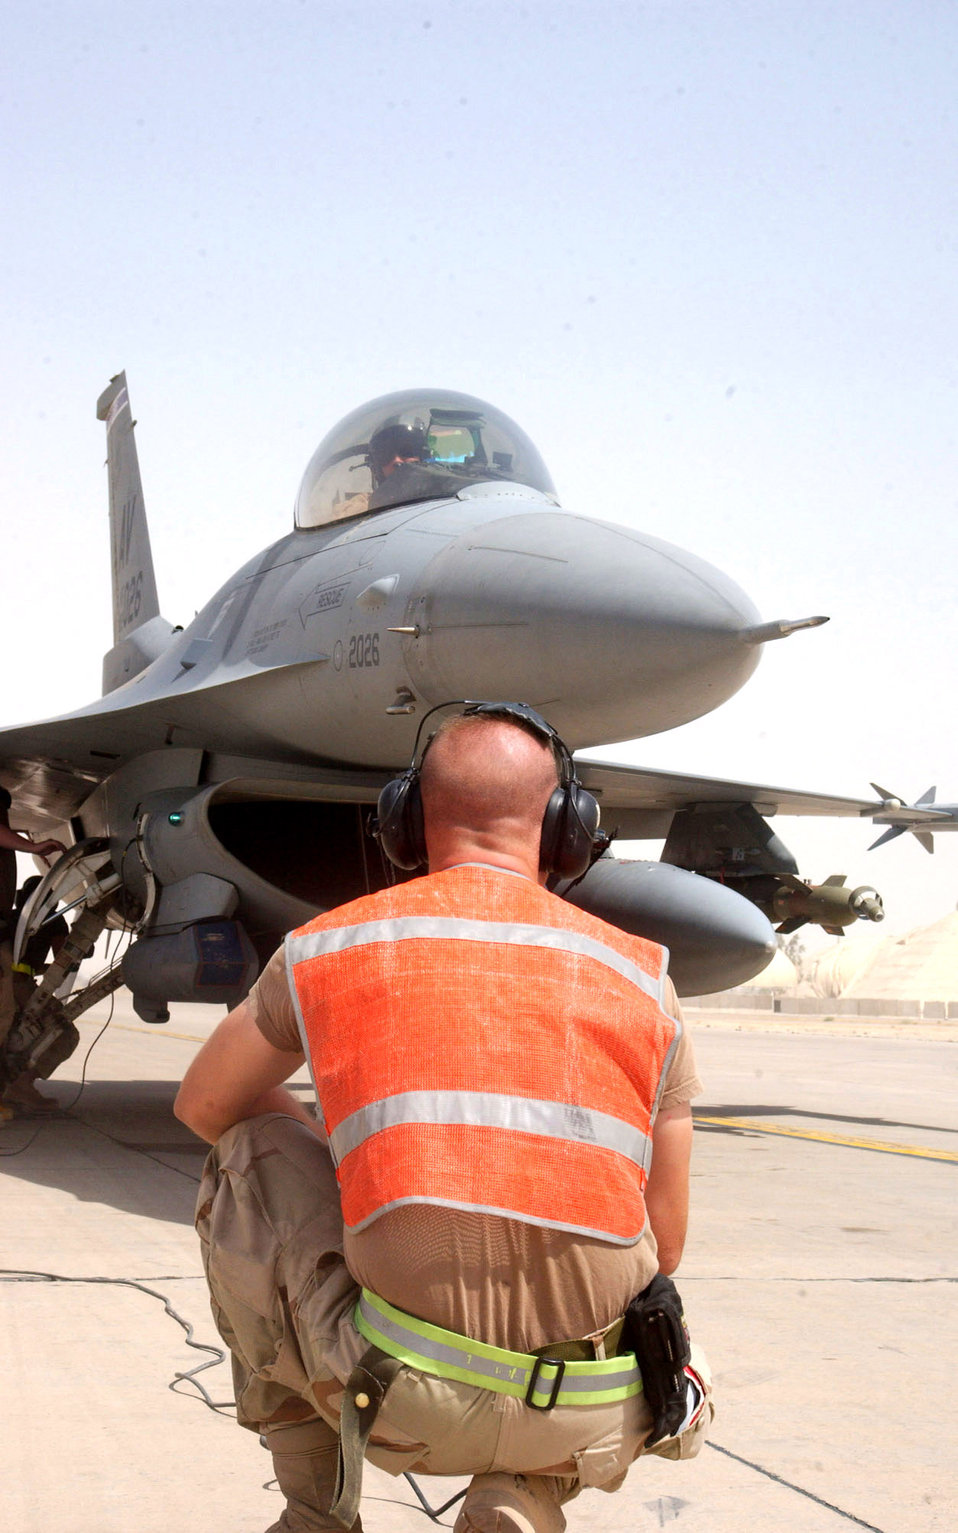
F-16 pilots provide support for troops on the battlefield

BALAD AIR BASE, Iraq -- An F-16 Fighting Falcon pilot and crew chief go through a final inspection before taking off from here. Aircrews from the 332nd Air Expeditionary Wing provide close-air support to troops on the ground.